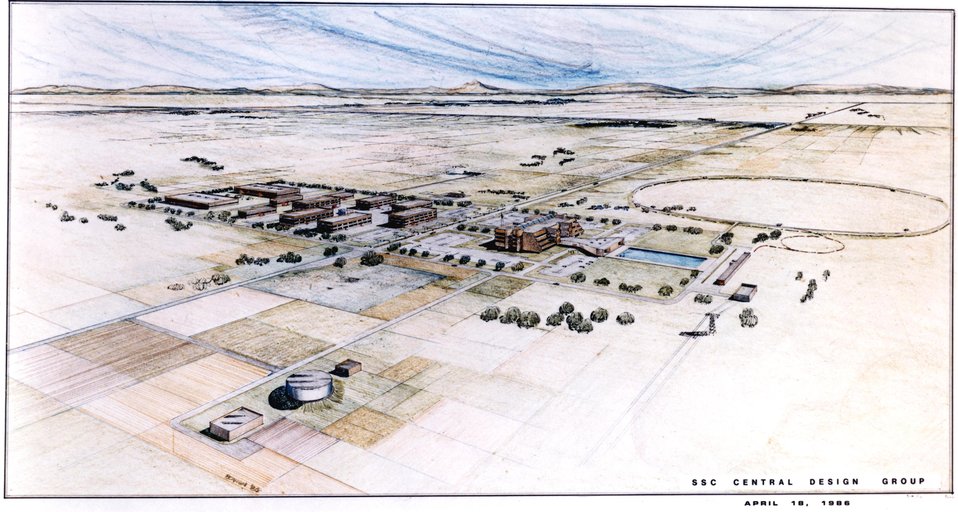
ARTIST'S AERIAL VIEW OF THE SSC CAMPUS AREA.

THE SUPERCOLLIDER WILL BE A 54-MILE CIRCUMFERENCE, RACE-TRACK SHAPED TUNNEL THAT IS 12 FEET IN CROSS-SECTION DIAMETER. APPROXIMATELY 10,000 SUPERCONDUCTING MAGNETS WILL FOCUS AND GUIDE TWO BEAMS OF PROTONS IN OPPOSITE DIRECTIONS AROUND THE TUNNEL. THE BEAMS WILL BE BOOSTED TO NEARLY THE SPEED OF LIGHT AND ALLOWED TO COLLIDE HEAD-ON WITH AN ENERGY OF 40 TRILLION ELECTRON VOLTS. THE COLLISIONS WILL CREATE NEW SUBATOMIC PARTICLES THAT WILL BE DETECTED AND ANALYZED. THE SUPERCOLLIDER WILL BE A UNIQUE BASIC RESEARCH TOOL FOR HIGH ENERGY PHYSICS, THE SCIENCE THAT STUDIES THE FUNDAMENTAL NATURE OF MATTER AND ENERGY.